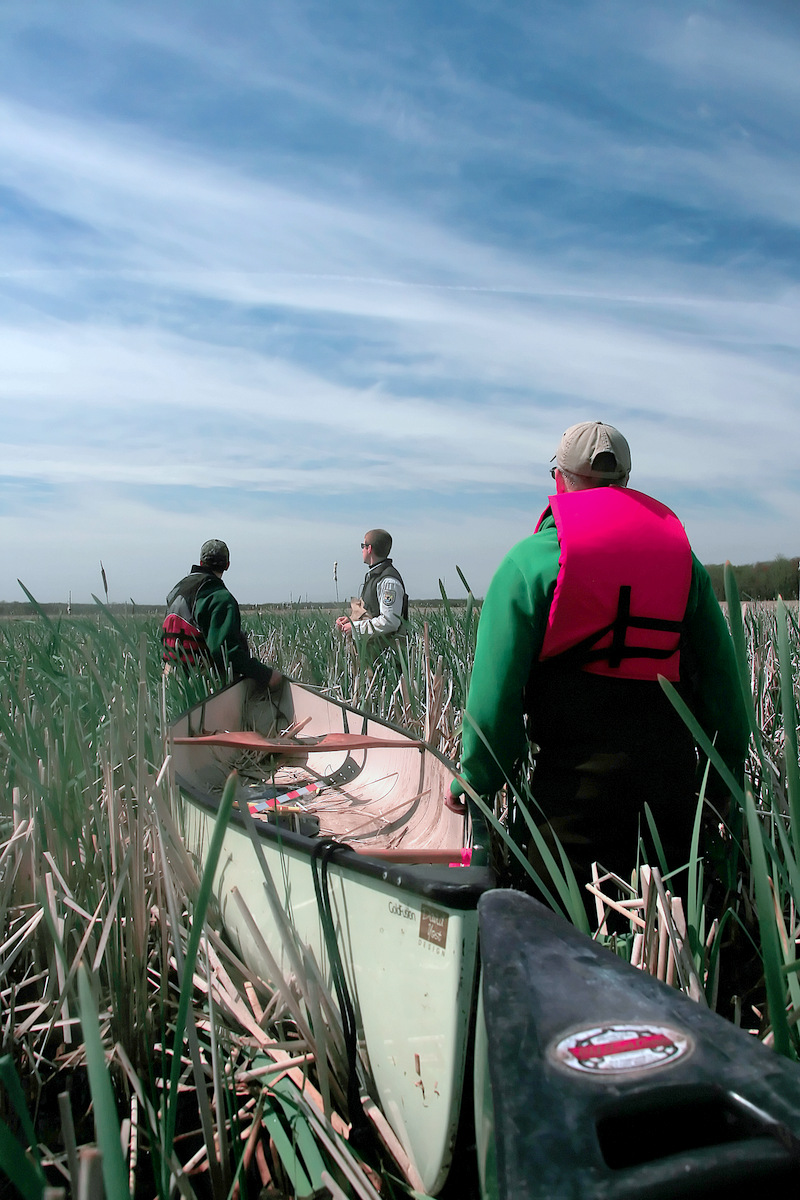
Collecting Bathymetry data for the Main Pool

Photographed at Montezuma National Wildlife Refuge.